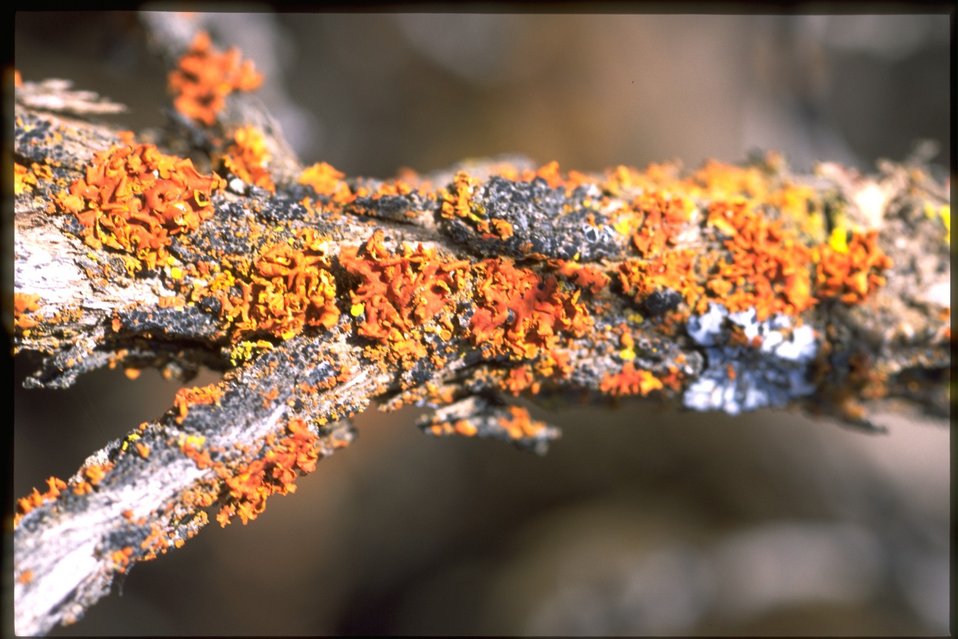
Lichen on tree branch.